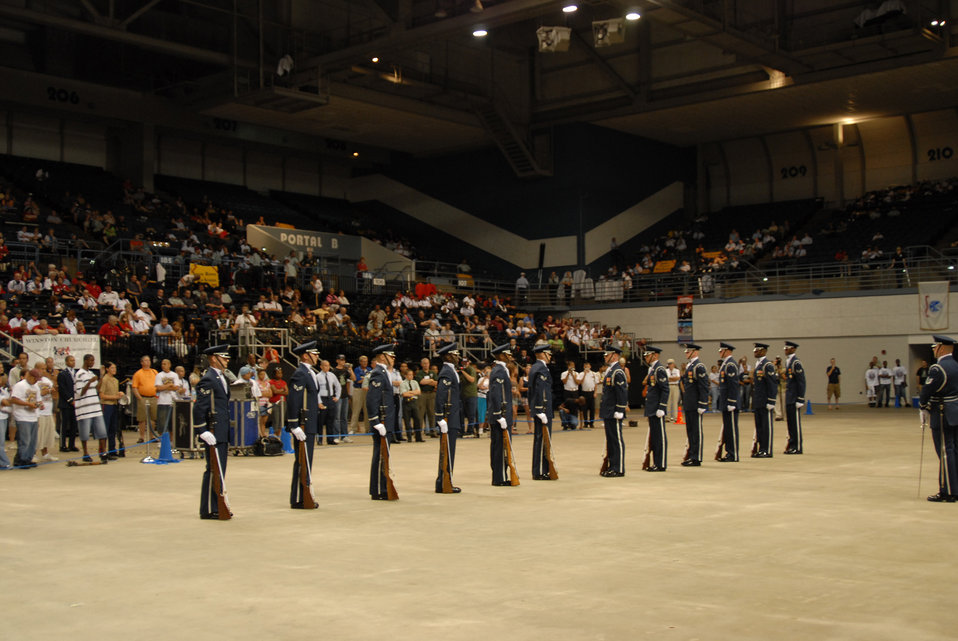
Air Force Honor Guard show competitors team espirit

The Air Force Honor Guard Drill Team performs at the National High School Drill Team Championships May 6 in Daytona. The team's performance was the last of their latest tour to Florida, where they also performed at the Fort Lauderdale Air and Sea Show.